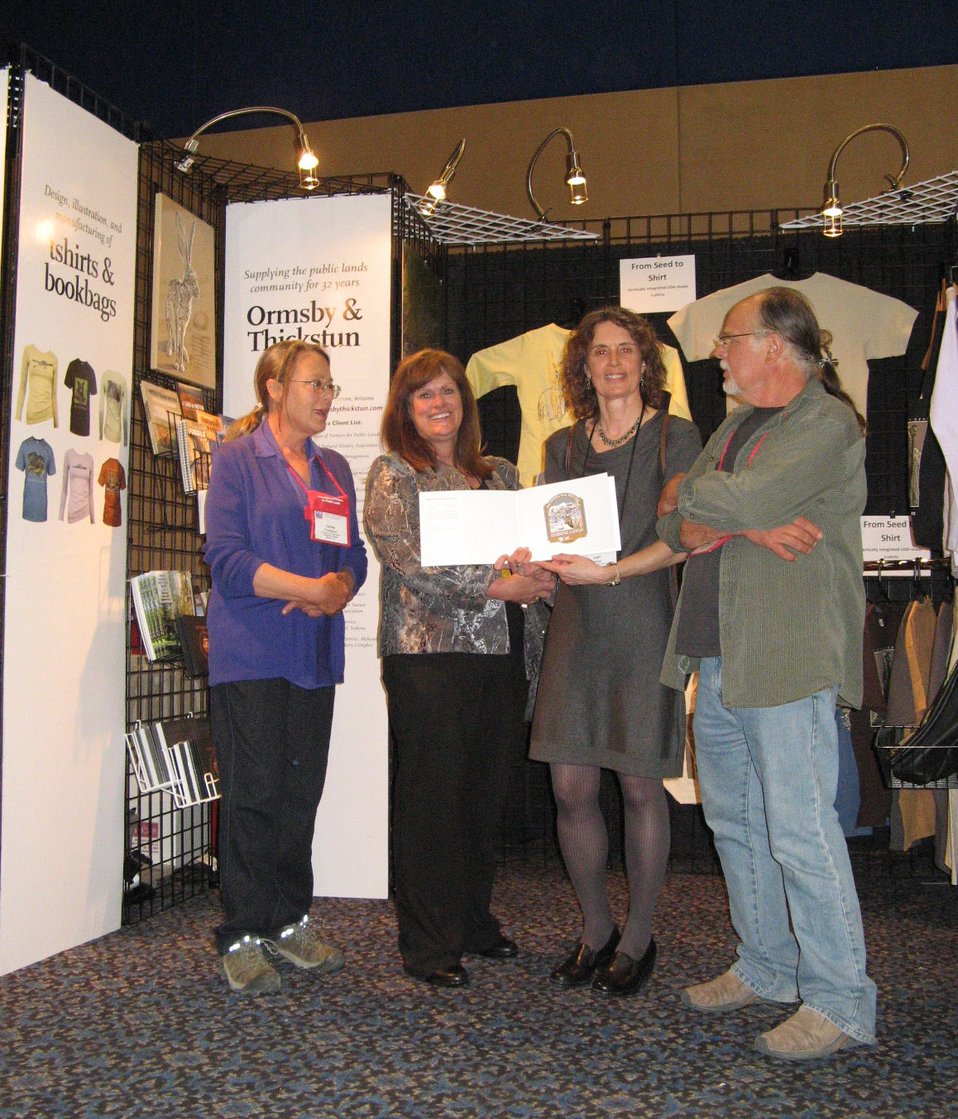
Meeting with the Refuge Centennial Logo Designers

Grand Teton Association Executive Director Jan Lynch and National Elk Refuge Outdoor Recreation Planner Lori Iverson (center, left to right) hold up a Ormsby and Thickstun Interpretive Design portfolio which features the National Elk Refuge's centennial logo.

Carole Thickstun (left) and Larry Ormsby (right) completed the logo for the Refuge in February. Lynch and Iverson had a chance to meet with the designers at the Association for Partners of Public Lands annual conference in March.